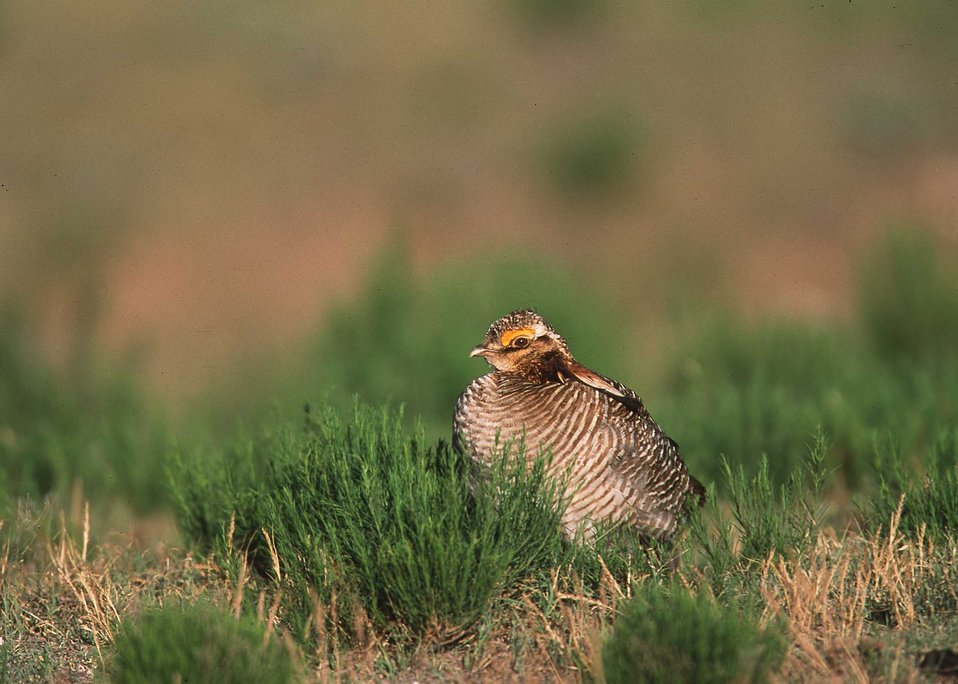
Lesser prairie chicken in Eastern New Mexico.